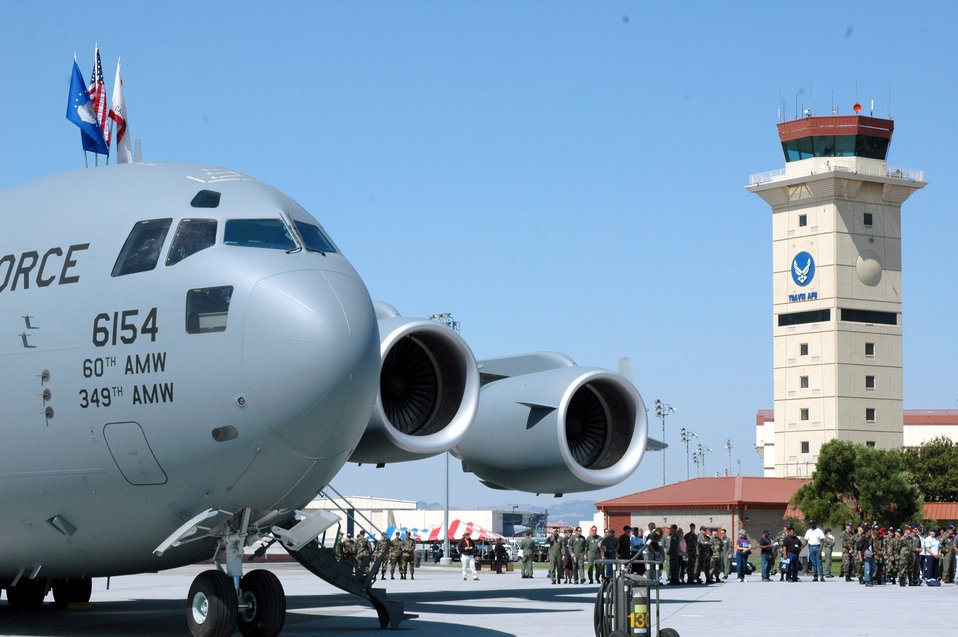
'Spirit of Solano' arrives at Travis

Travis Air Force Base, Calif., celebrates the arrival of its first C-17 Globemaster III, the